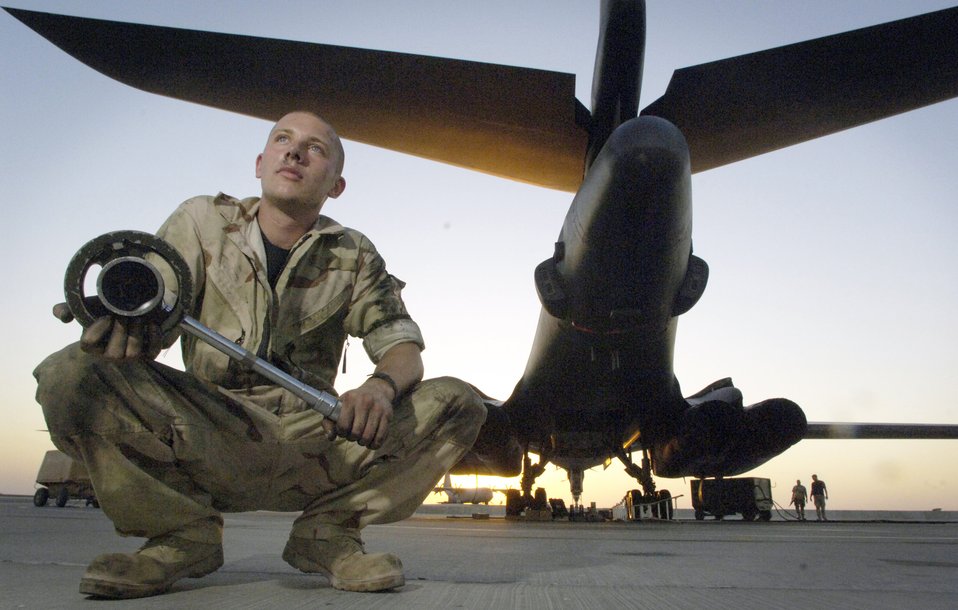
Crew chief keeps B-1s flying on Air Force birthday

Airman 1st Class Jonathan Termun is a B-1 crew chief assigned to the 28th Aircraft Maintenance Squadron at Ellsworth Air Force Base, S.D. He is deployed to Southwest Asia in support of operations Iraqi Freedom and Enduring Freedom.